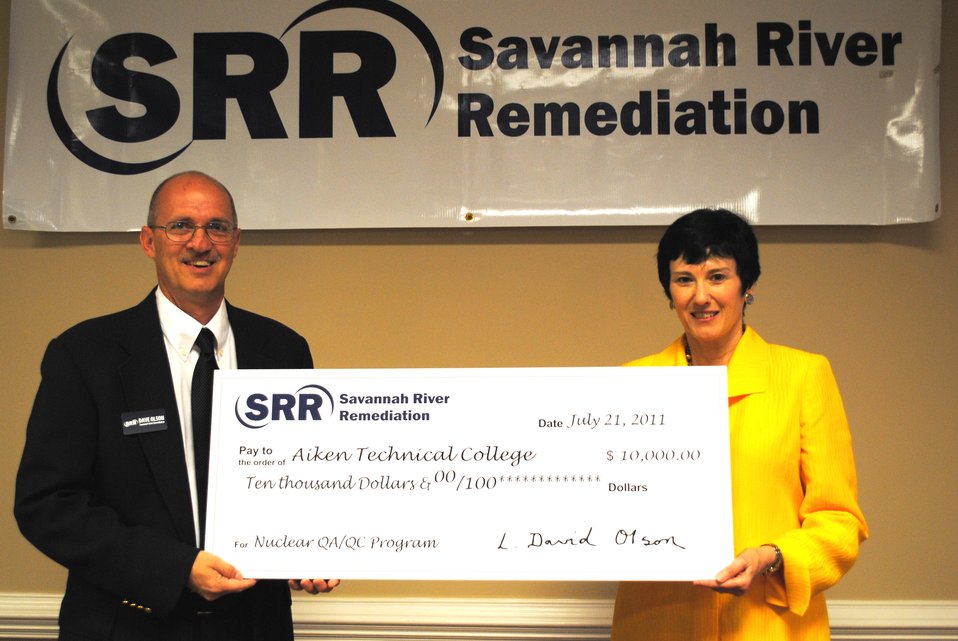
SRR Donates $10,000 For Nuclear Training at Aiken Technical College

Savannah River Remediation (SRR) is helping Aiken Technical College’s new nuclear quality control program by providing $10,000 for curriculum development.

Earlier this year, Aiken Technical College (ATC) received a DOE grant to develop and implement specialization certificates in quality control and nuclear welding.
Dr. Susan Winsor, president of ATC, said she was gratified to receive the funding and knows that it will ultimately provide a return on investment by providing high-quality workers to companies in the nuclear industry such as SRR.